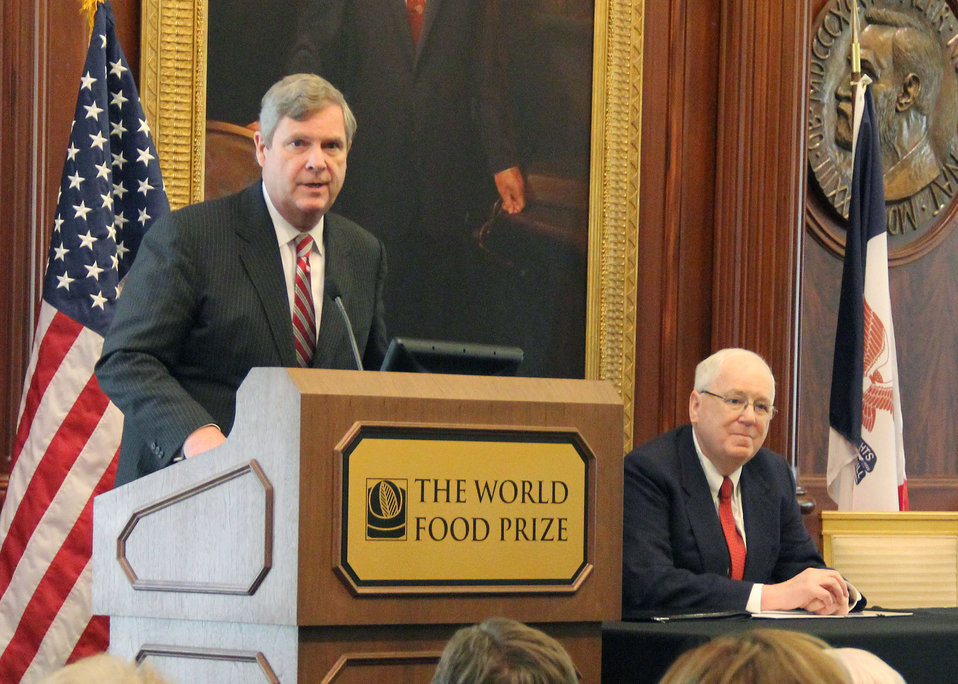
Agriculture Secretary Tom Vilsack makes remarks as former Ambassador to the Kingdom of Cambodia Kenneth M. Quinn of the World Food Prize Foundation looks on during the World Food Prize Foundation Cement Partnership to Support USDA's Wallace-Carver Internship Program, at the World Food Prize Hall of Laureates in Des Moines, Iowa, on Feb. 19, 2013, before a crowd of 200 youth and business leaders to formalize a partnership enhancing the Wallace-Carver Internship Program for students involved in cutting-edge agriculture, science and research.